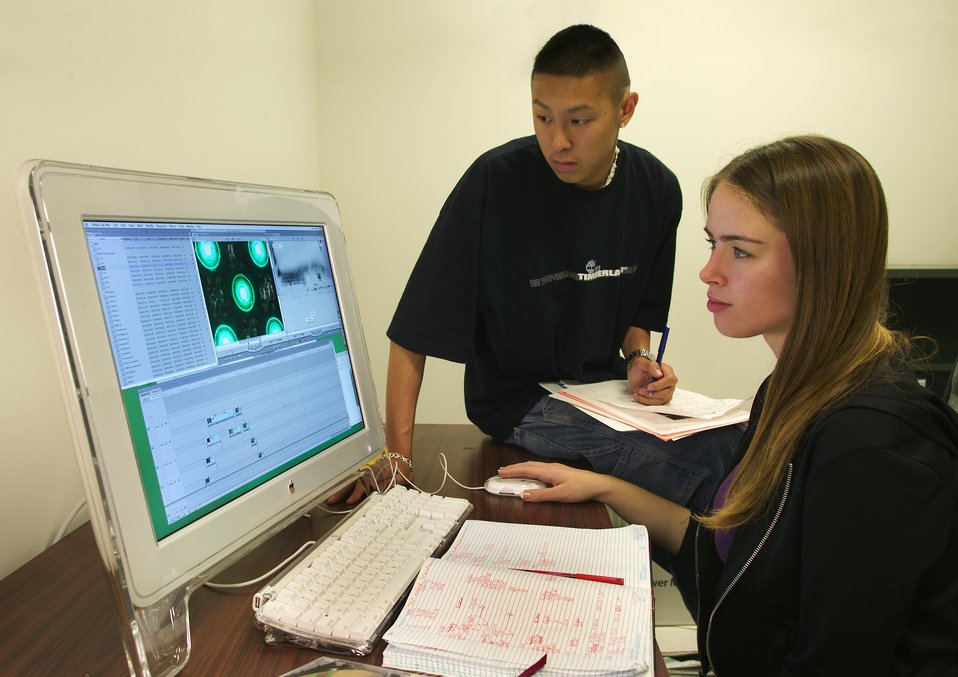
STUDENTS CONDUCTING ELECTRON MICROSCOPE RESEARCH OF LIGHT EMITTING DIODES (LEDS) AT THE NATIONAL CENTER FOR ELECTRON MICROSCOPY.

LAWRENCE BERKELEY NATIONAL LABORATORY'S NATIONAL CENTER FOR ELECTRON MICROSCOPY IS A U.S. DEPARTMENT OF ENERGY USER FACILITY PROVIDING SCIENTIFIC RESEARCHERS WITH ESSENTIAL RESOURCES FOR ELECTRON BEAM MICRO-CHARACTERIZATION OF MATERIALS.